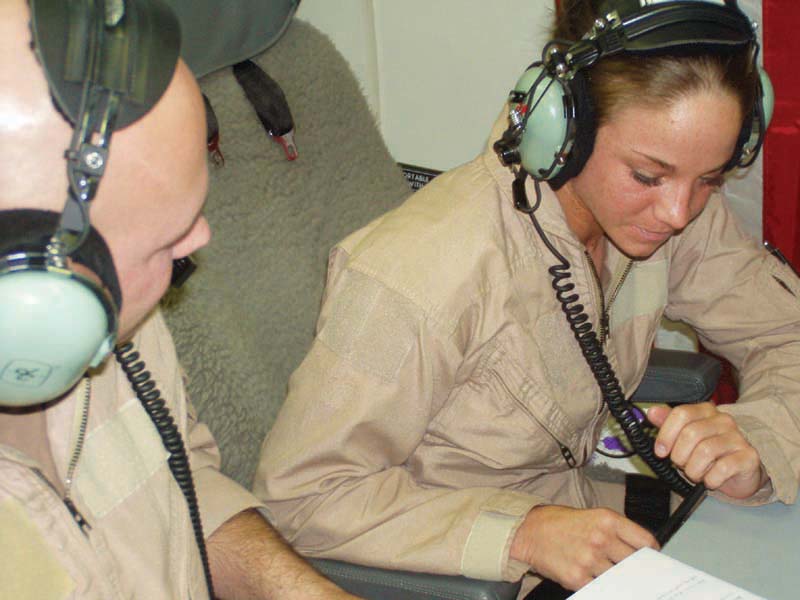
Joint STARS duo reaches troops on the ground

SOUTHWEST ASIA -- Tech. Sgt. Thomas Bloomberg and Airman 1st Class Emily Leece communicate with ground forces more than five miles below them. They are E-8C Joint STARS air operations technicians with the 379th Air Expeditionary Wing at a forward-deployed location here from Robins Air Force Base, Ga.